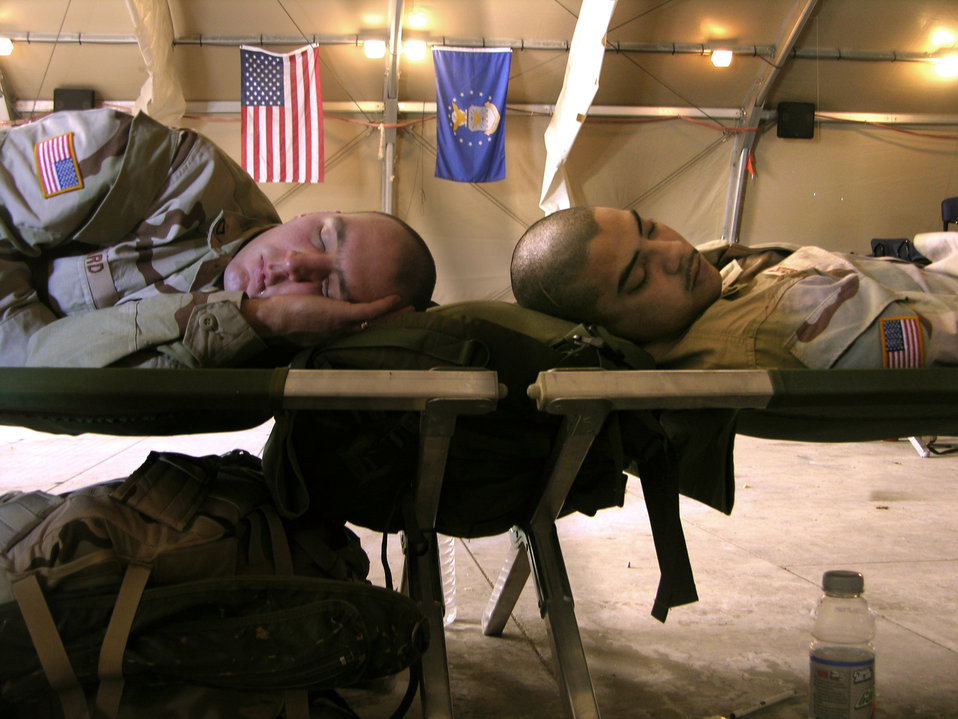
Manas Airmen handle transient surge

MANAS AIR BASE, Kyrgyzstan -- Soldiers catch up on sleep here Feb. 26. More than 1,500 transient troops made their way through the base Feb 22 to 26, pushing the base to a 190 percent occupancy rate. Officials with the 376th Expeditionary Services Squadron shut down the base fitness facility as well as various recreational areas to house the visitors.